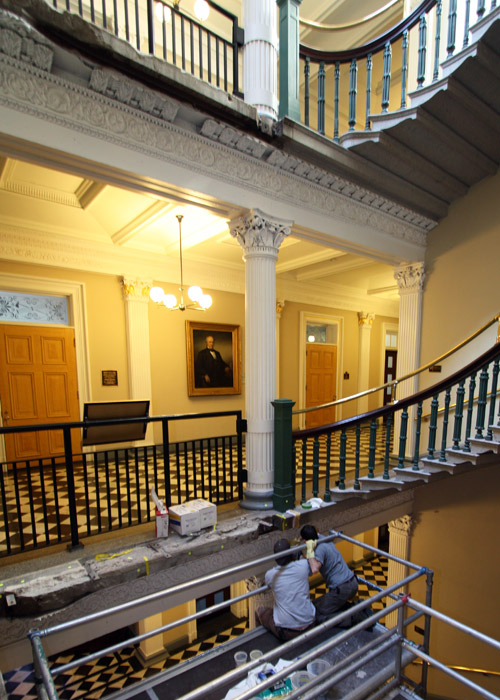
vertical-stairwell-scaffolding

Measurements are taken of missing pieces of the granite stone trim that were removed to accommodate the elevators installed in 1910 (and again in the 1940s).